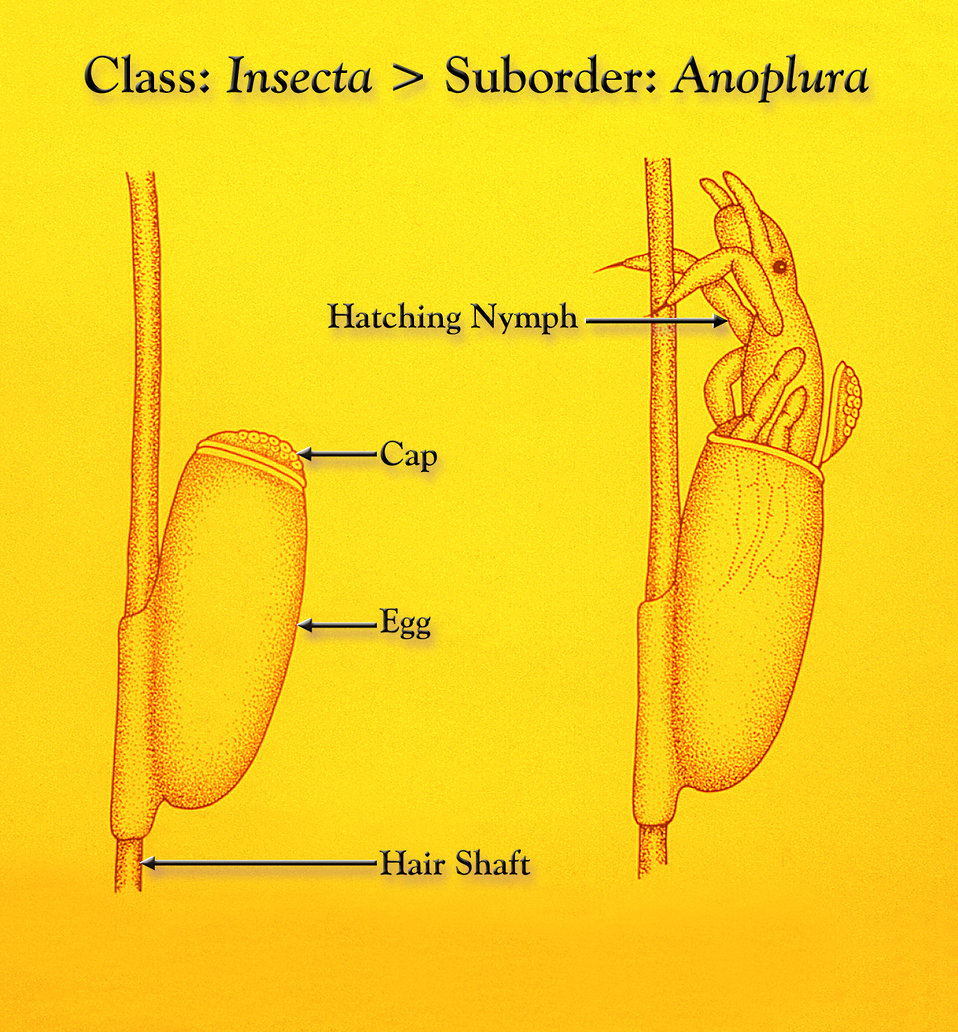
This illustration depicts the morphologic characteristics of a typical louse egg, and the manner in which it is attached to the mammalian host's hair shaft.